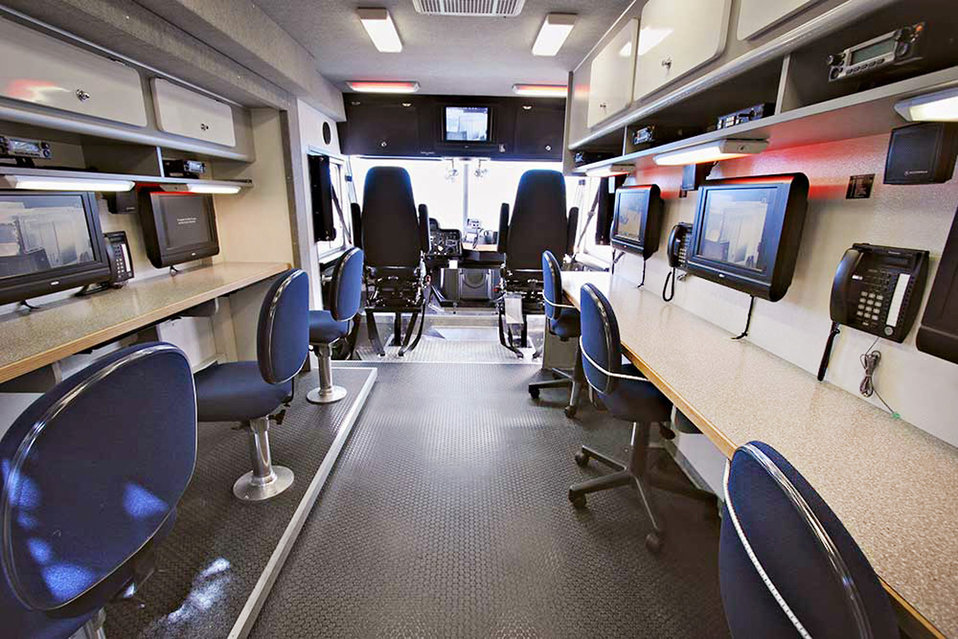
Robin's mobile command center to assist in emergencies

The inside a mobile emergency operations center that will soon be delivered to Robins Air Force Base, Ga., will be similar to this one, custom-built for Joint Base McGuire-Dix-Lakehurst in New Jersey.